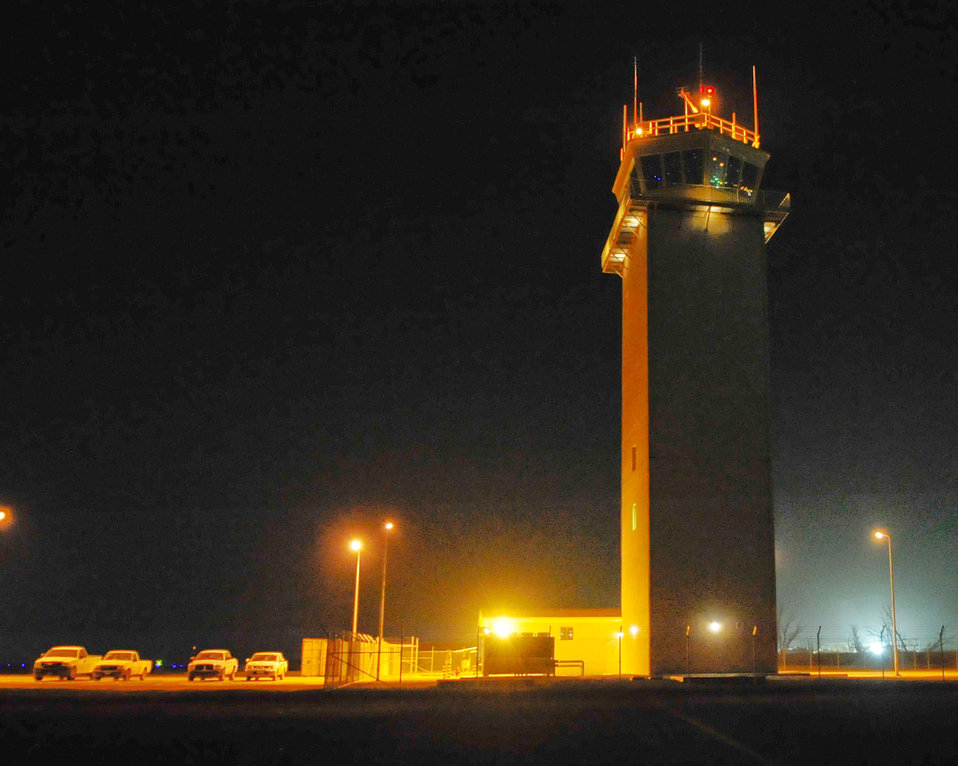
ATC tower opens

The new air traffic control tower became operational for the first time March 12, 2010, at Ali Base, Iraq. The ATC tower marks the beginning of a new era of modernization.